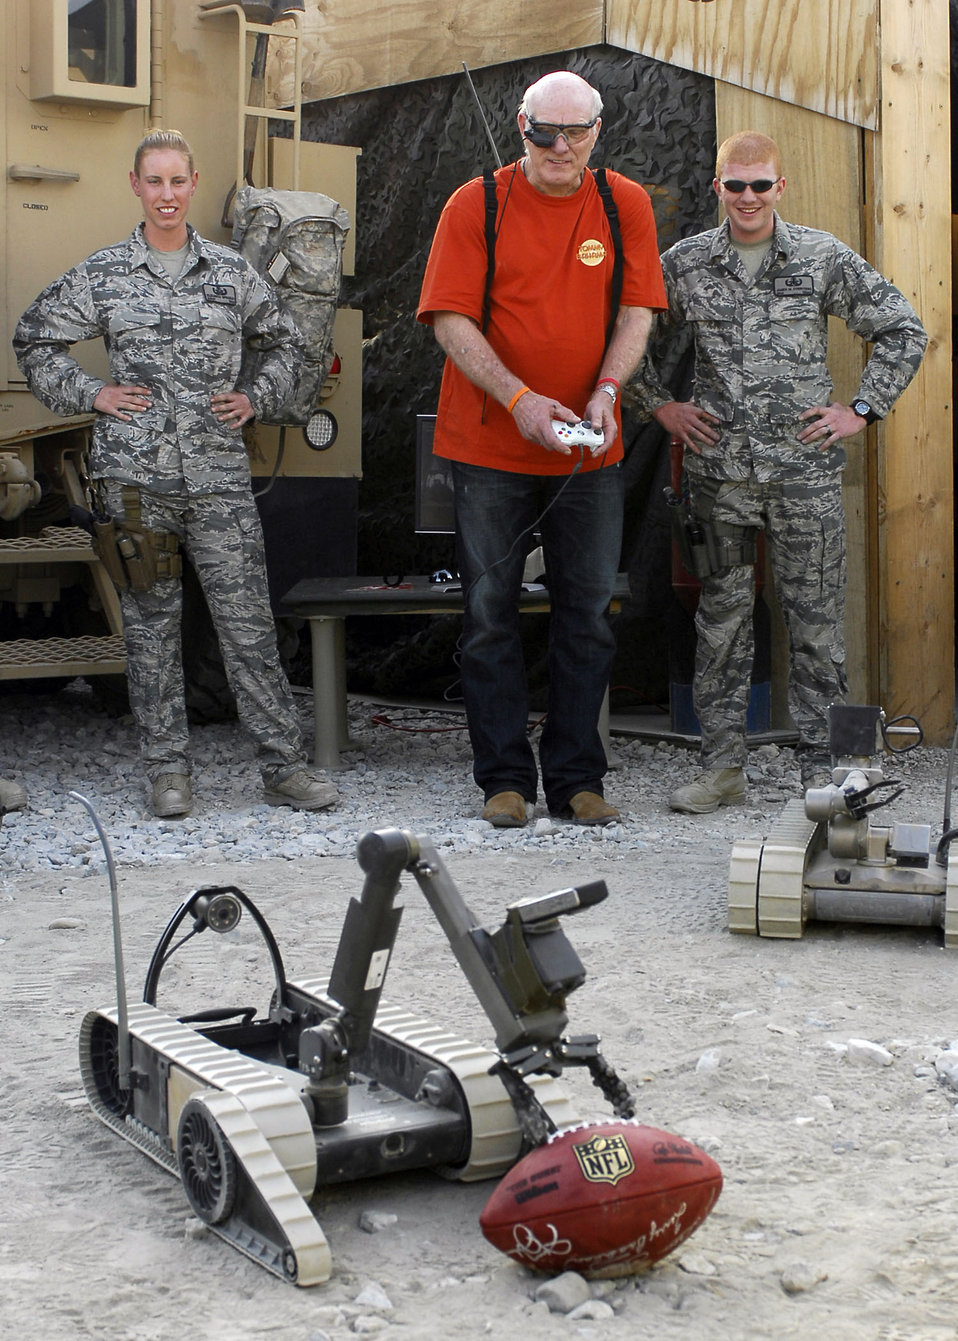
'Fox NFL Sunday' team visits Bagram